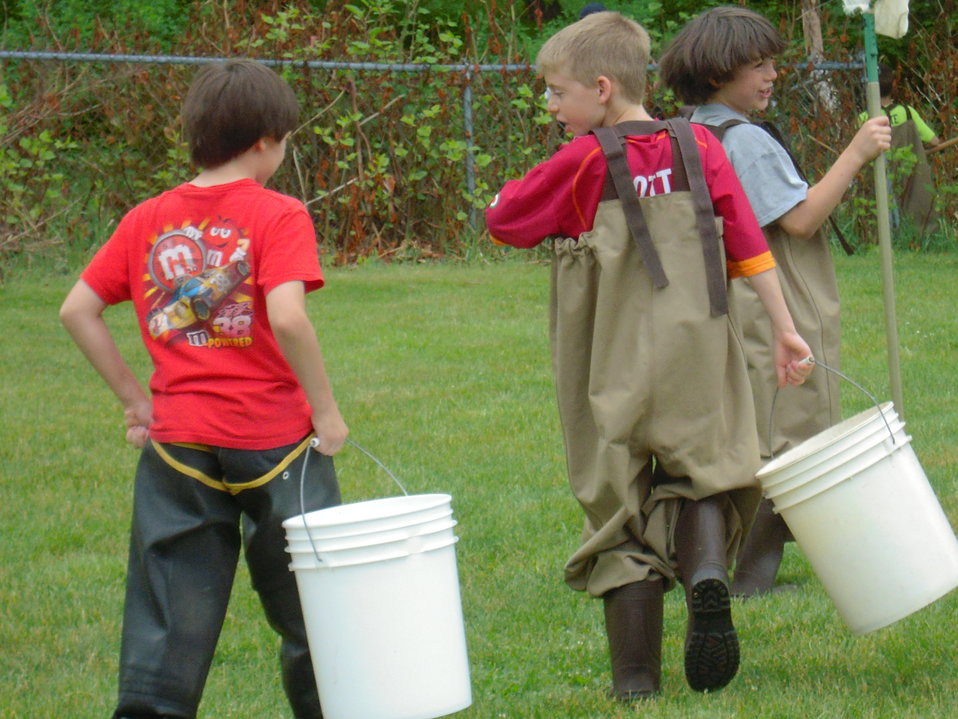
Carrying collection buckets for findings